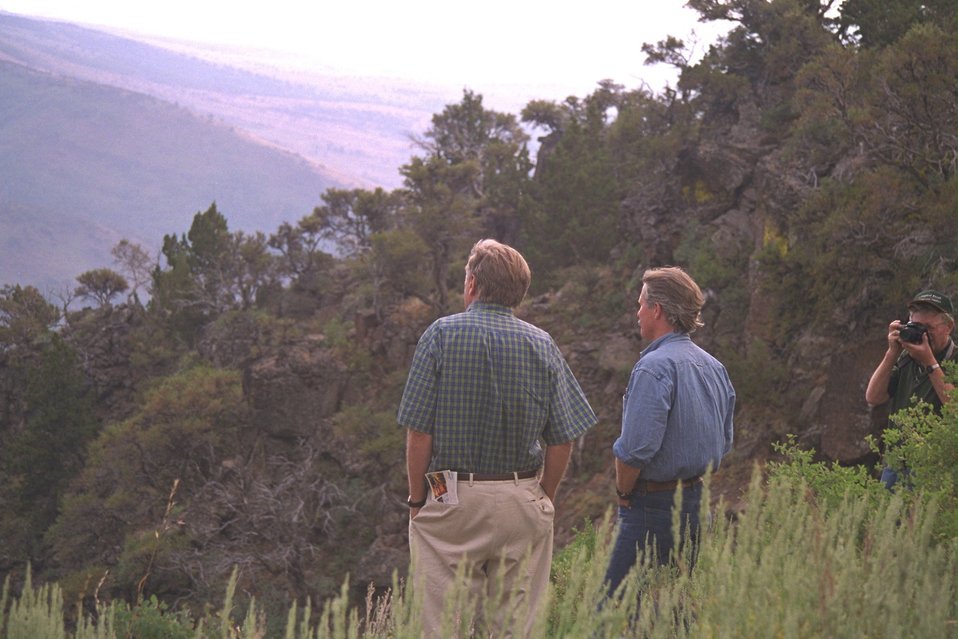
Secretary Babbitt consults with Governor Kitzhaber regarding the Steens Mountain Designation, while looking out over Big Indian Gorge.